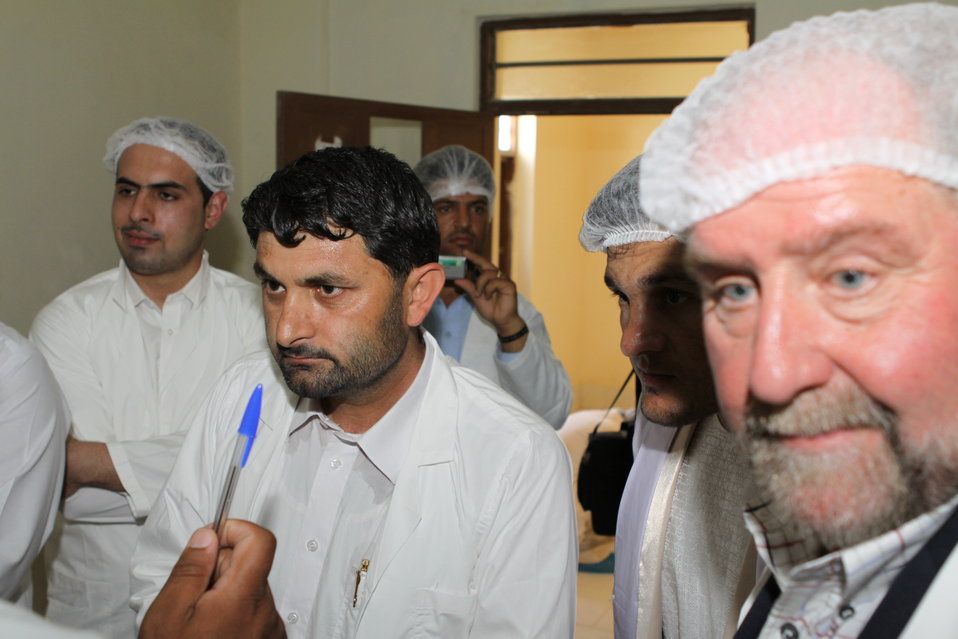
Bolan Poultry Farm